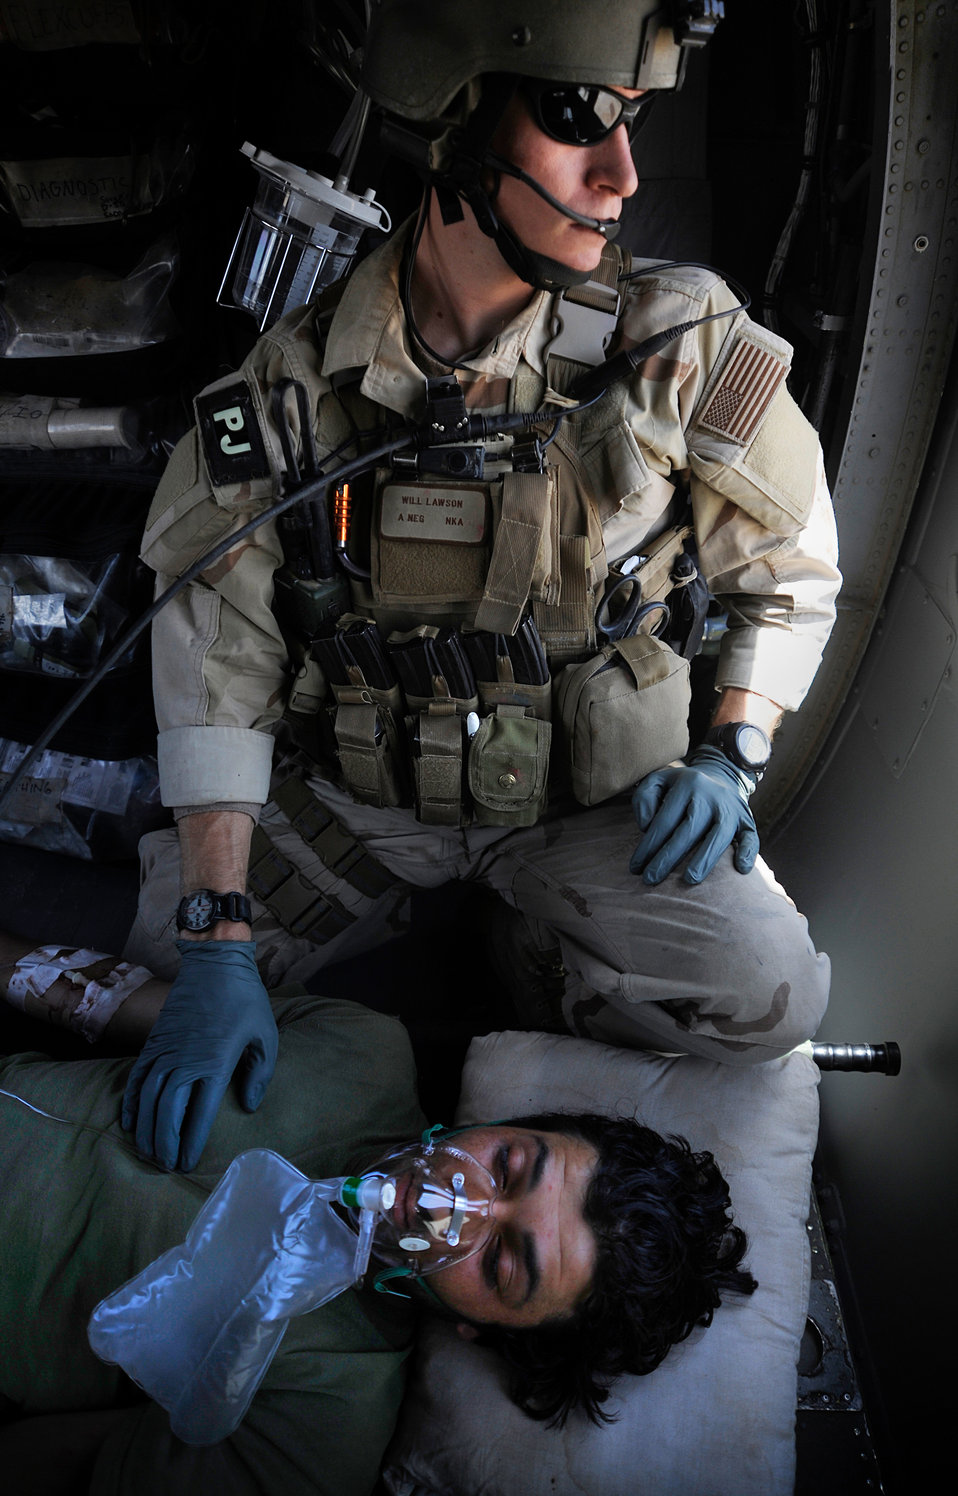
Golden Hour

Staff Sgt. William Lawson, pararescueman with the 129th Expeditionary Rescue Squadron, comforts a wounded Afghan National Army Soldier, Hemland Province, Afghanistan. Sergeant Lawson will provide care to the injured soldier until they can safely deliver him to a hospital.